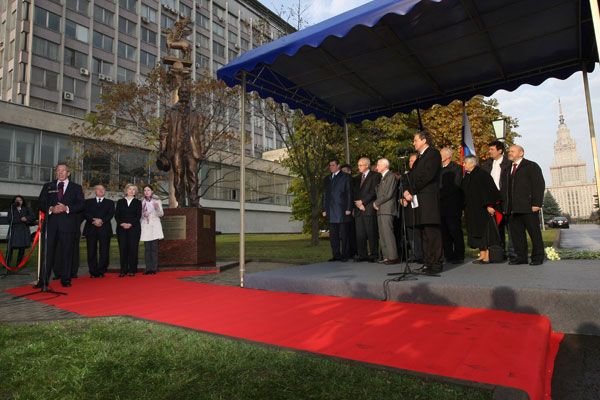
Secretary Clinton Attends Opening of Walter Whitman's Statue

U.S. Secretary of State Hillary Rodham Clinton attends the opening of the statue of American poet Walter Whitman at the campus of the Moscow State University in Moscow, Russia, October 14, 2009.